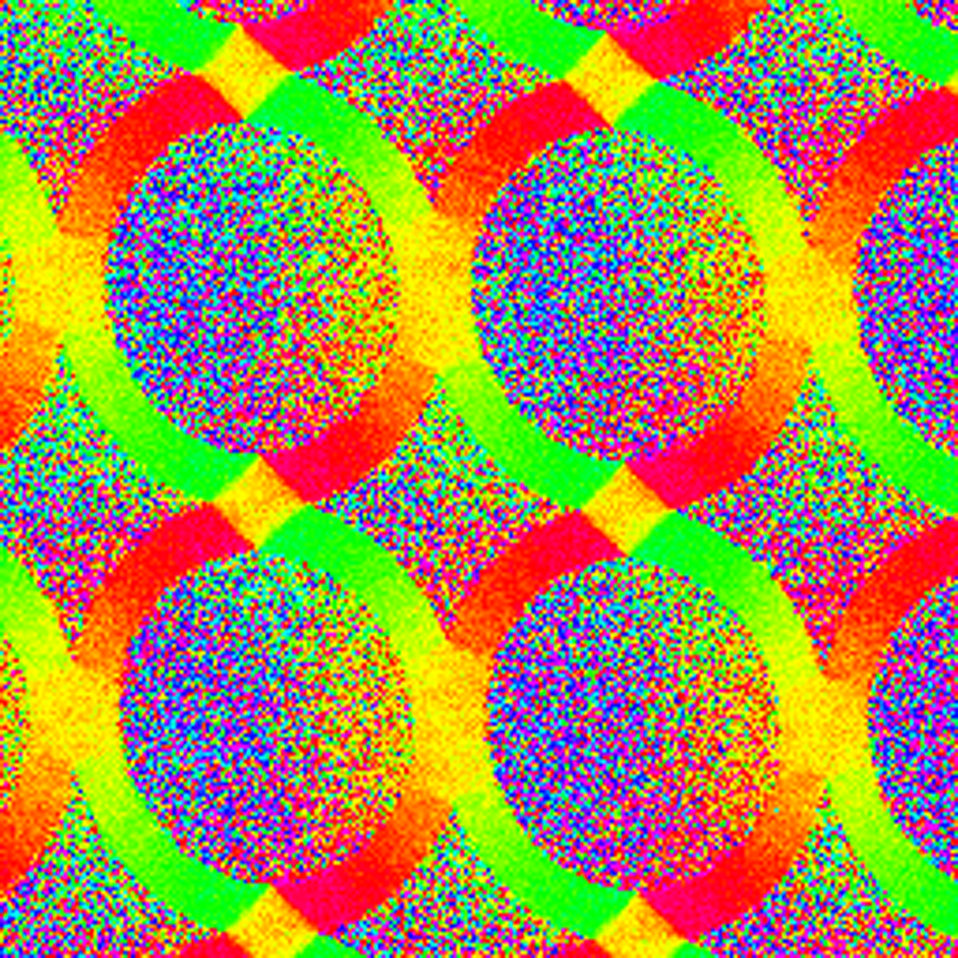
Magnetic Monet

This graphic shows the magnetic 'domains' within thin-film rings of a new advanced material for making non-volatile logic devices. Changes in color indicate changes in the direction of the magnetization of the material. Housed in an Advanced Measurement Laboratory metrology wing 12 meters (40 feet) underground, the NIST-developed instrument that recorded this data is the highest resolution magnetic imaging instrument in the United States.